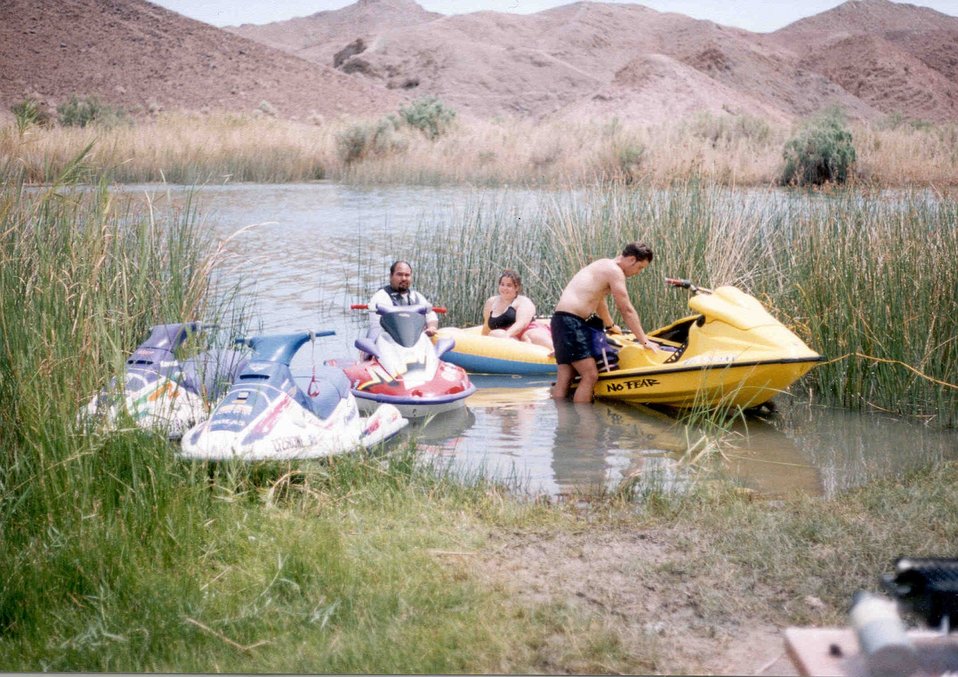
Jet skiers enjoying the summer heat at Squaw Lake.